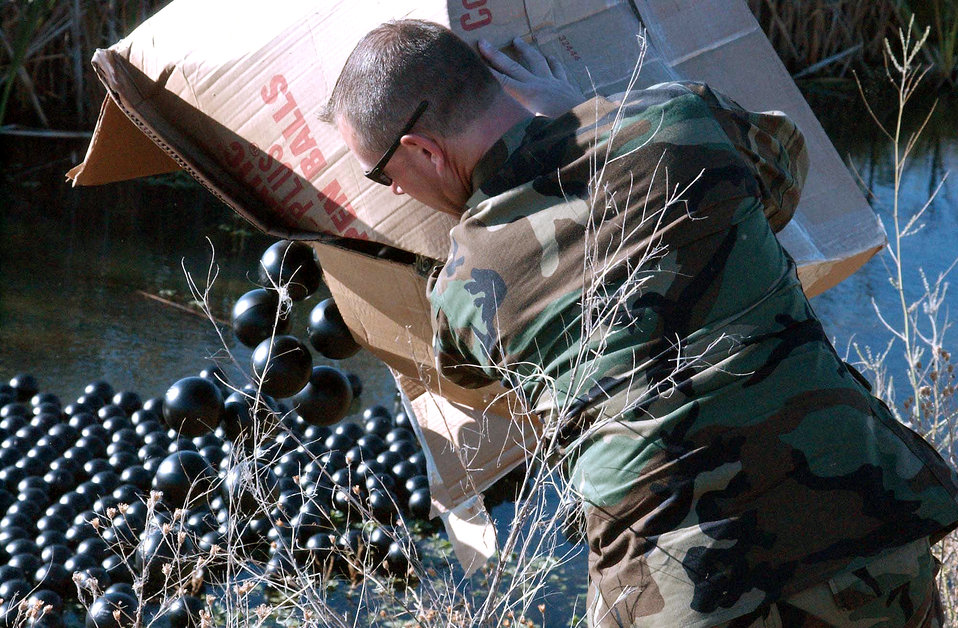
Having a ball

FAIRCHILD AIR FORCE BASE, Wash. -- Master Sgt. Stacy Maier dumps a box of